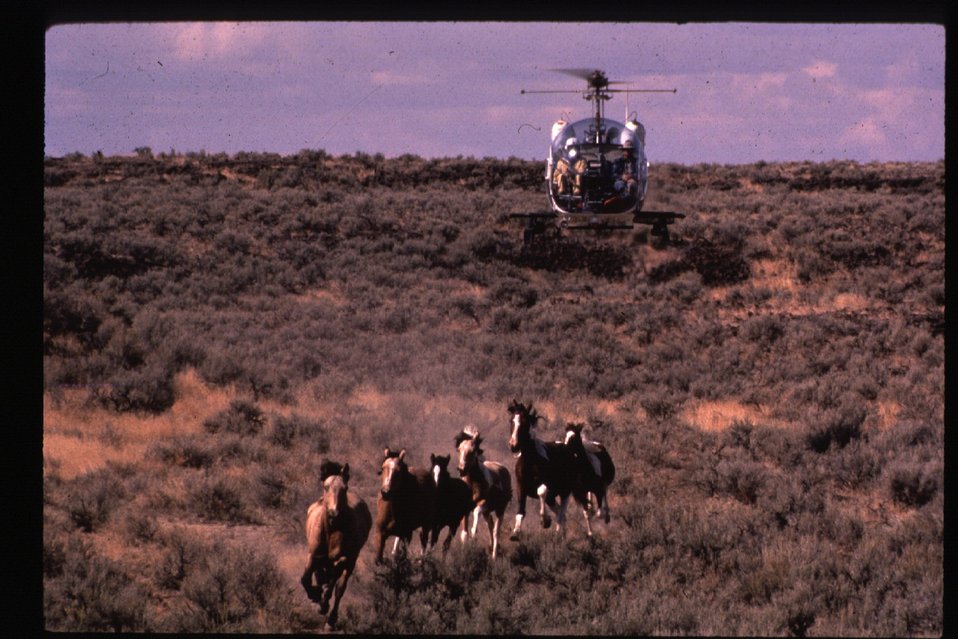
Wild Horse and Burro roundup Helicopter roundup Vale District Oregon LSRD Lower Snake River District